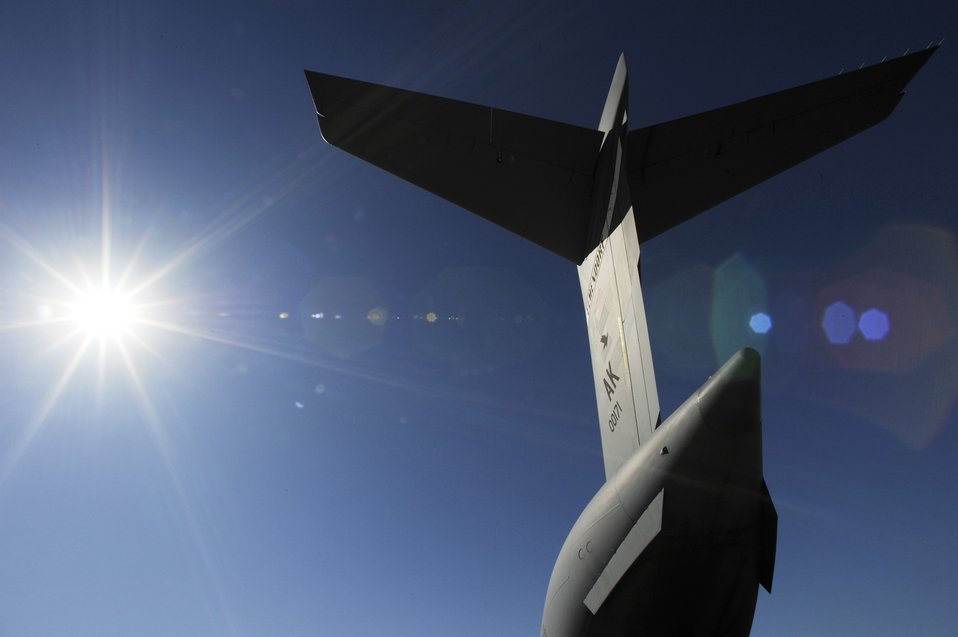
The big 'T'

A C-17 Globemaster III from the 3rd Wing at Elmendorf Air Force Base, Alaska, waits for cargo to be loaded at Charleston AFB, S.C., Jan. 26, 2010 in support of Operation Unified Response. Charleston AFB was used as a staging area for Haiti relief efforts.